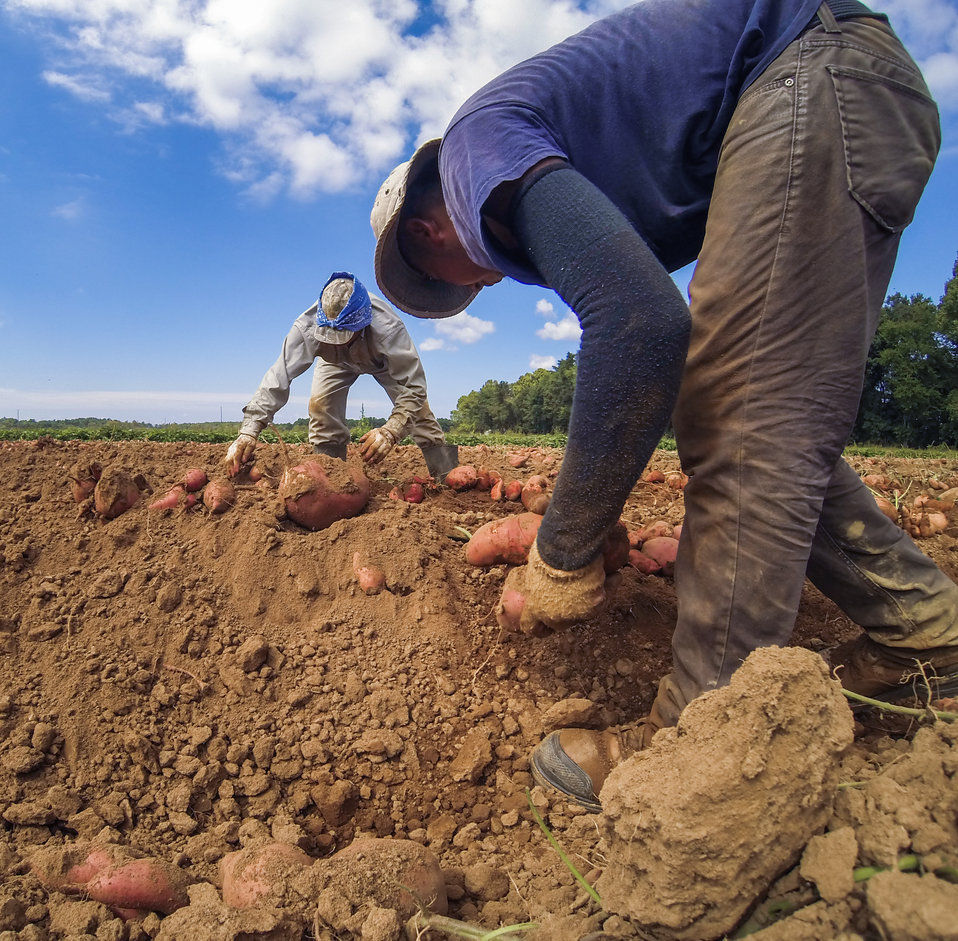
Migrant workers pick, separate, and process sweet potatoes at Kirby Farms in Mechanicsville, VA on Friday, Sept. 20, 2013. 200 acres of the farm are devoted to eggplant, spinach, beets, tomato, jalapeno peppers, melons and a variety of greens. Soybeans and small grain are grown on the remaining 300 acres. Using rotational crop practices allows Kirby Farms to double and triple crop yields. Wholesalers, who buy from this farm, sell the produce to major supermarkets in the Mid-Atlantic region, from North Carolina to Maryland. Restaurants in the local area prepare and serve the local bought produce to patrons in the Richmond, VA metropolitan area.